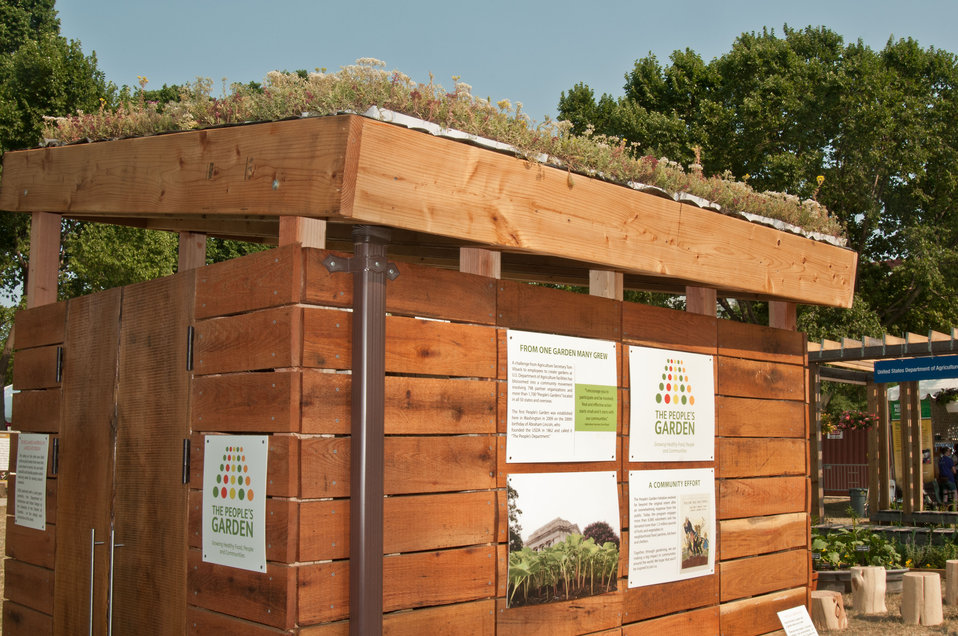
U.S. Department of Agriculture (USDA), People’s Garden Initiative, Green Roof Shed at the 2012 Smithsonian Folklife Festival, on the National Mall in Washington, D.C., on Thursday, June 28, 2012. The siding on this shed is made of recycled lumber from trees that came down in storms. Green roofs are attractive, practical benefits include additional thermal protection, noise reduction and increase the life expectancy of the roof. U.S. Department of Agriculture (USDA) partnered with the University of the District of Columbia’s (UDC), Department of Agriculture and Urban Design on the design and construction of this shed. UDC is a Land Grant university. For more information and answers to questions such as how do you build a roof to accommodate a green roof? And is it possible to modify an already built roof to add a green roof? Go to blogs.usda.gov/2012/07/05/going-green-green-roofs-and-rai... One of the three themes this year is “Campus and Community.” It celebrates the 150 years of the USDA and the Land-Grant University System. The U.S. Department of Agriculture (USDA) and the Land-Grant system extend education across the country, contributing to American agriculture success and rural prosperity. “Campus and Community” has demonstrations, discussions, hands-on activities, and entertainment to that showcase the many ways that this partnership works to improve American agriculture and rural life.